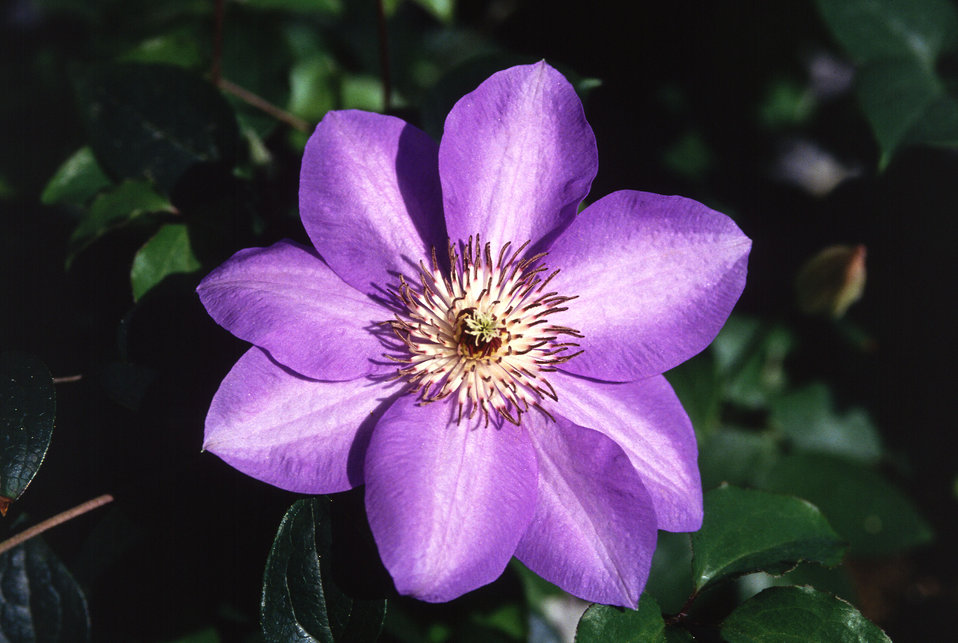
Clematis hybrid comes in a rainbow of colors and will grow in any good garden soil that enables the roots to stay moist and cool, and the crown to be in full sun.